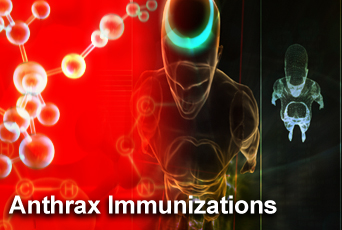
Anthrax vaccine program starts

Air Force starts anthrax vaccine immunization program for Airmen assigned to high-threat areas.